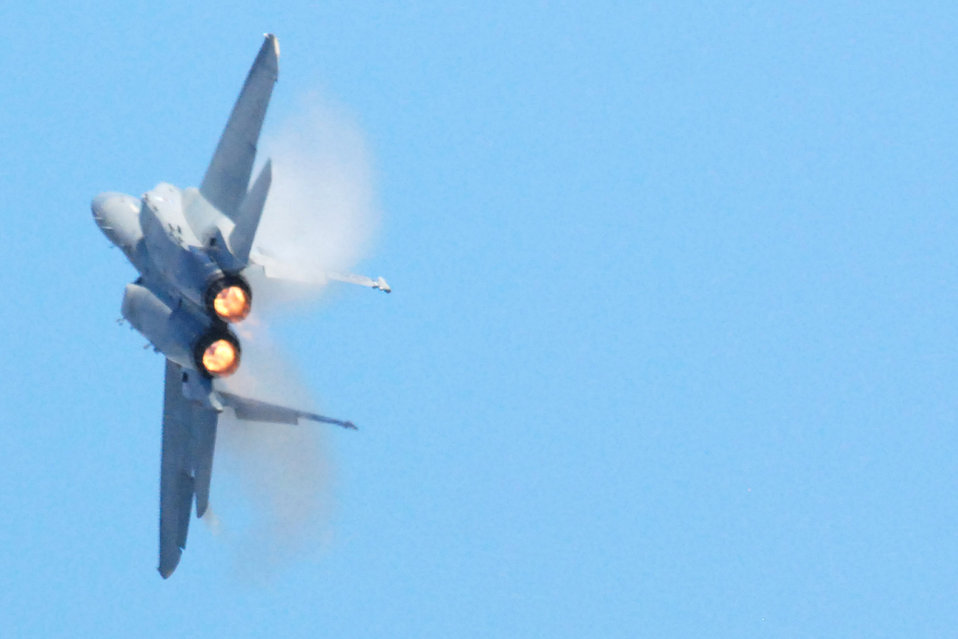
Heritage flight

Capt. Sam Joplin performs aerial maneuvers in an F-15 Eagle to display the capabilities of the fighter to hundreds of base and community spectators during a demonstration May 1 at Eglin Air Force Base, Fla. The Air Combat Command demo team has performed more than 150 times to spectators around the globe over the last two years. This is the final demonstration for the F-15C, completing a 26-year career that began in 1983. Captain Joplin is an F-15 West Coast Demonstration Team pilot.